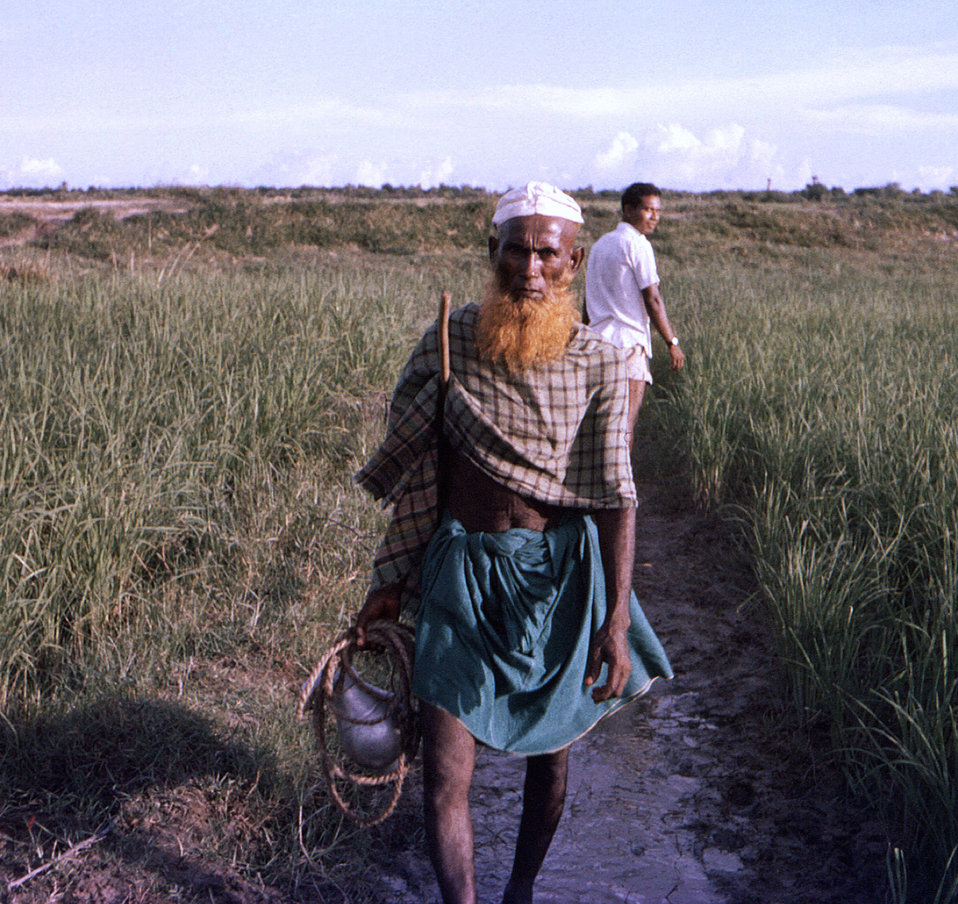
This October, 1975 photograph, depicted 'Unicef 8' boat Captain, and driver, Robin Gomes, in the background, who'd just crossed paths with the elderly man in the foreground, who was a Patuakhali District villager.